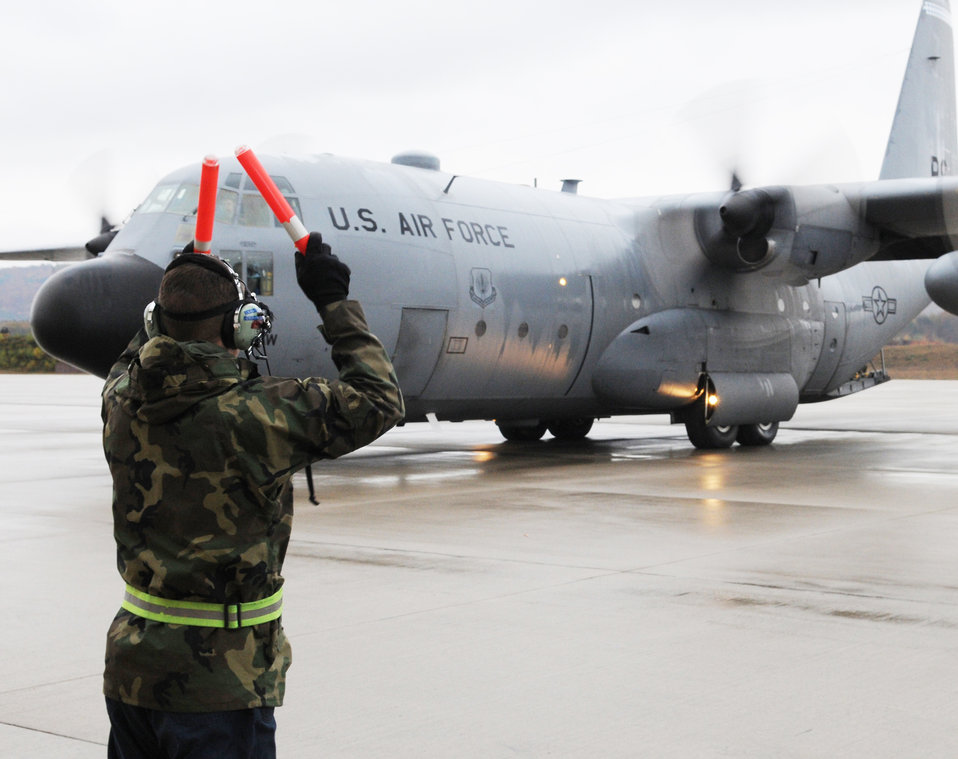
Ramstein's C-130E Final Departure

Senior Airman Jason Ricke, an 86th Aircraft Maintenance Squadron crew chief at Ramstein Air Base, Germany, marshals last C-130E Hercules onto the flight line for departure Nov. 2, 2009. The E-model Hercules aircraft have provided more than 40 years of airpower to bases in the United States Air Forces in Europe, and are being replaced by the newer C-130J Super Hercules as part of revitalizing the Air Force fleet.